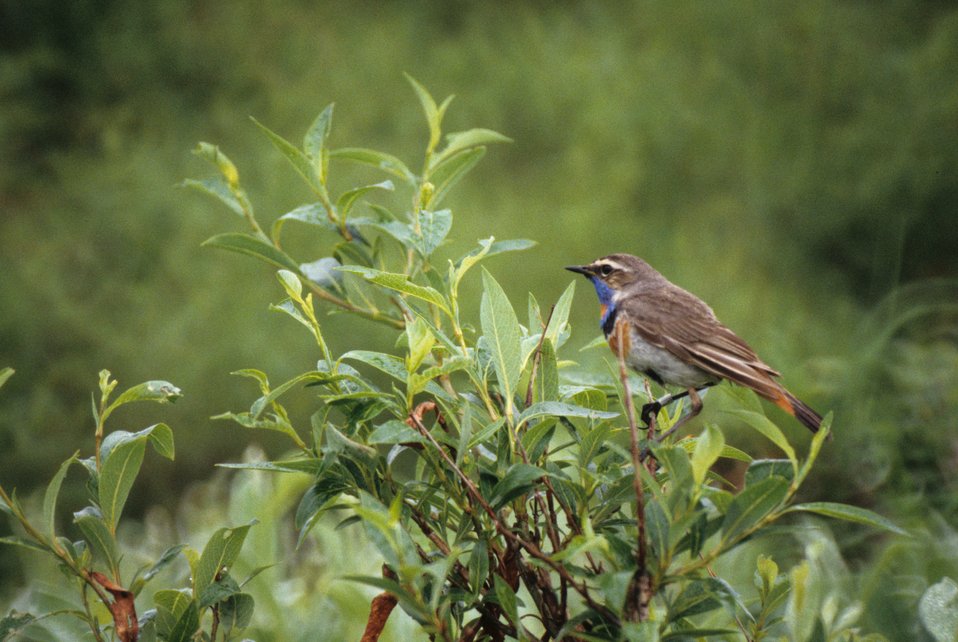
Bluethroat Male

The Bluethroat is one of the smallest members of the Thrush family measuring 5.5 (14 cm) inches in length. The colorful blue throat pattern distinguishes this breeding male from other species. Nests are found on the tundra in thickets near water. The Blue